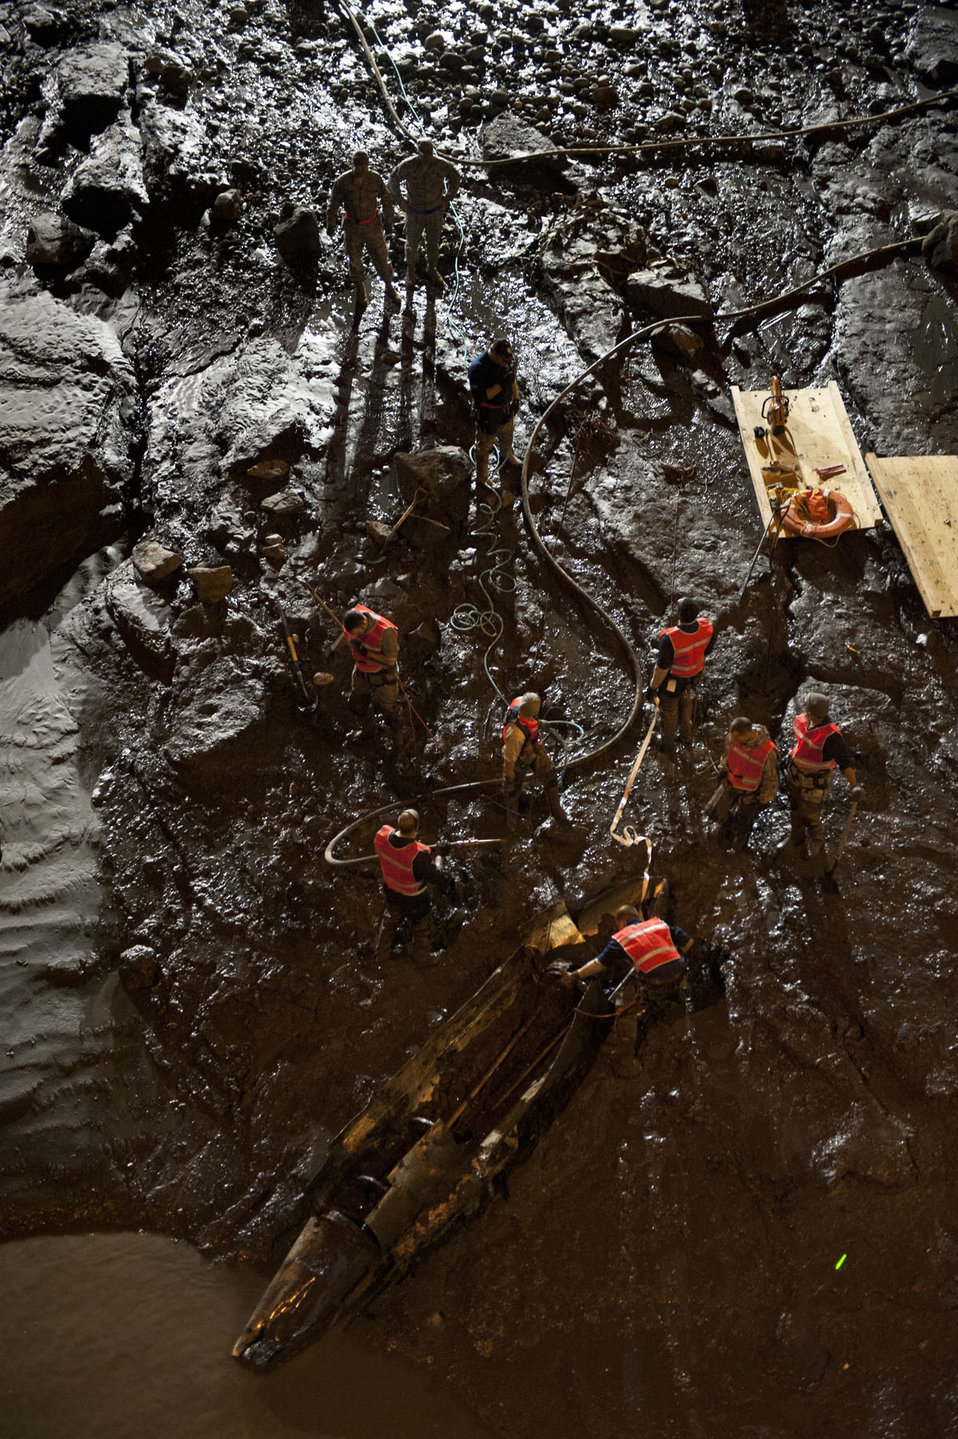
Phantom in the water

Airmen from the Joint Base Elmendorf Richardson Crash Recovery Unit dig out an entrenched F-4 Phantom II fuel tank from the Port of Anchorage, Alaska, Sept. 18, 2012. F-4s were flown at Elmendorf Air Force Base through 1982.